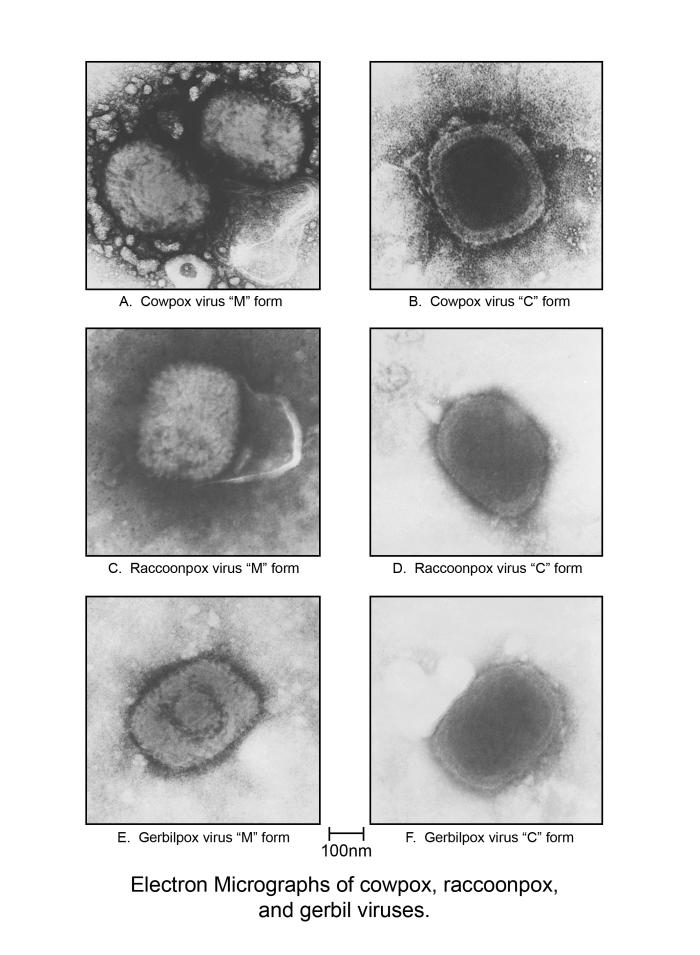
This montage of six transmission electron micrographs (TEM) depicted three different Poxviridae family members, and their morphologic similarities in both their 'M', or mulberry form, and their 'C', or capsular form. The three viruses include the cowpox, raccoonpox, and the gerbilpox viruses.The Poxviridae viruses carry at their core, a genome composed of a single, linear double-stranded DNA segment. Before its eradication, one of the most infamous viruses known, the smallpox virus, Variola major, was a member of this family.